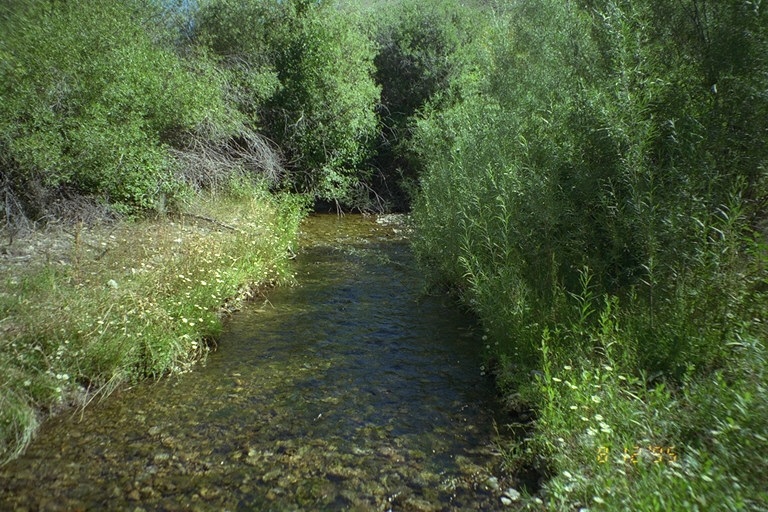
Riparian area Public Lands Salmon Field Office UCSC Upper Columbia Salmon Clearwater District